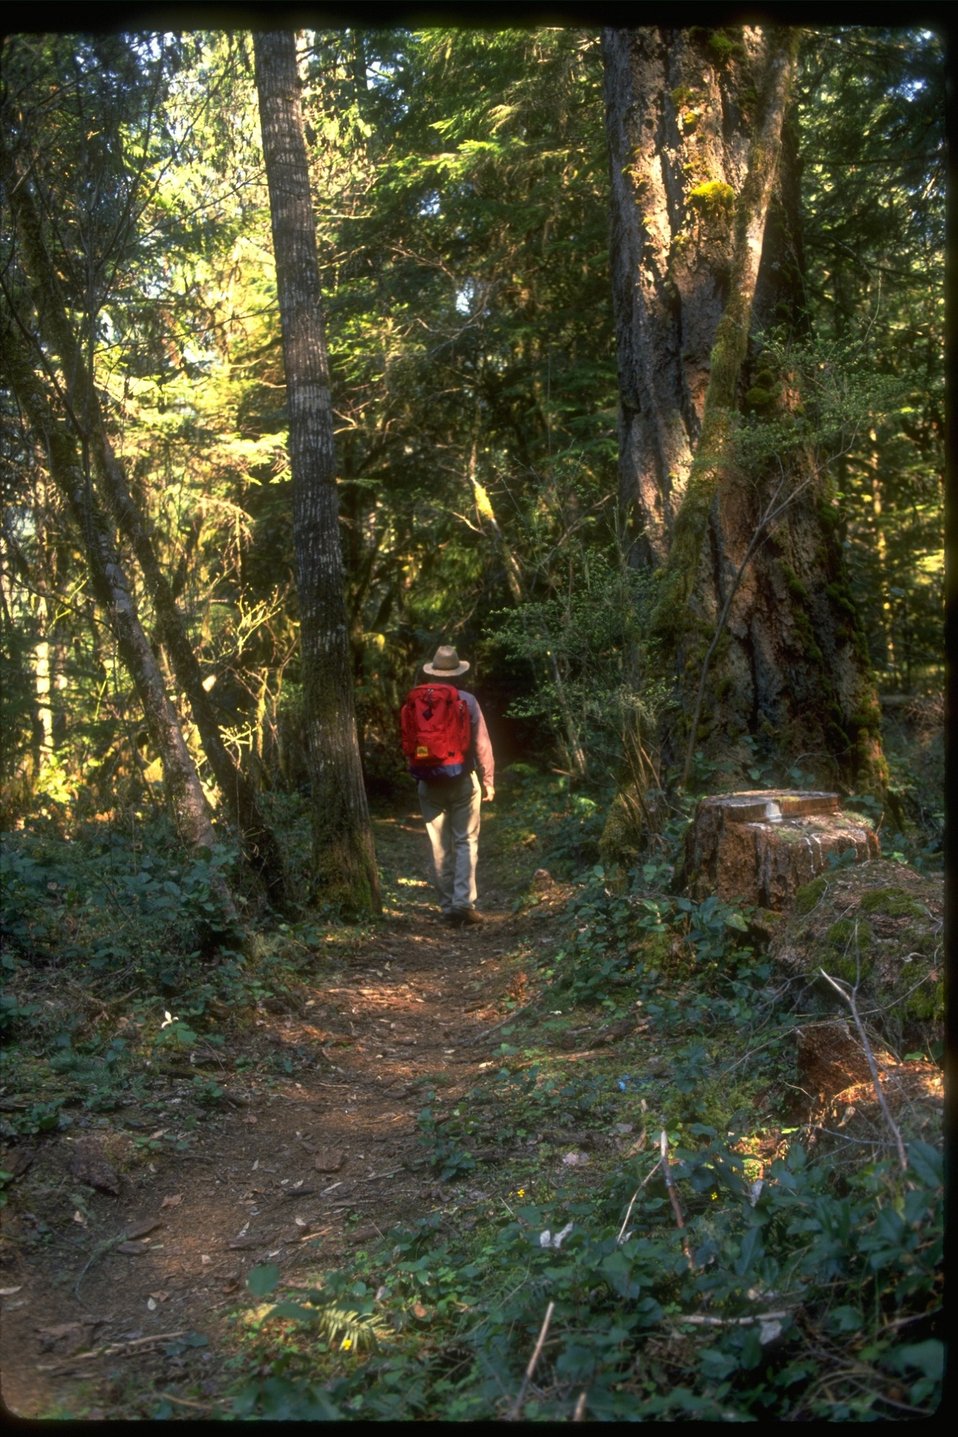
Hiker on the North Umpqua Trail.